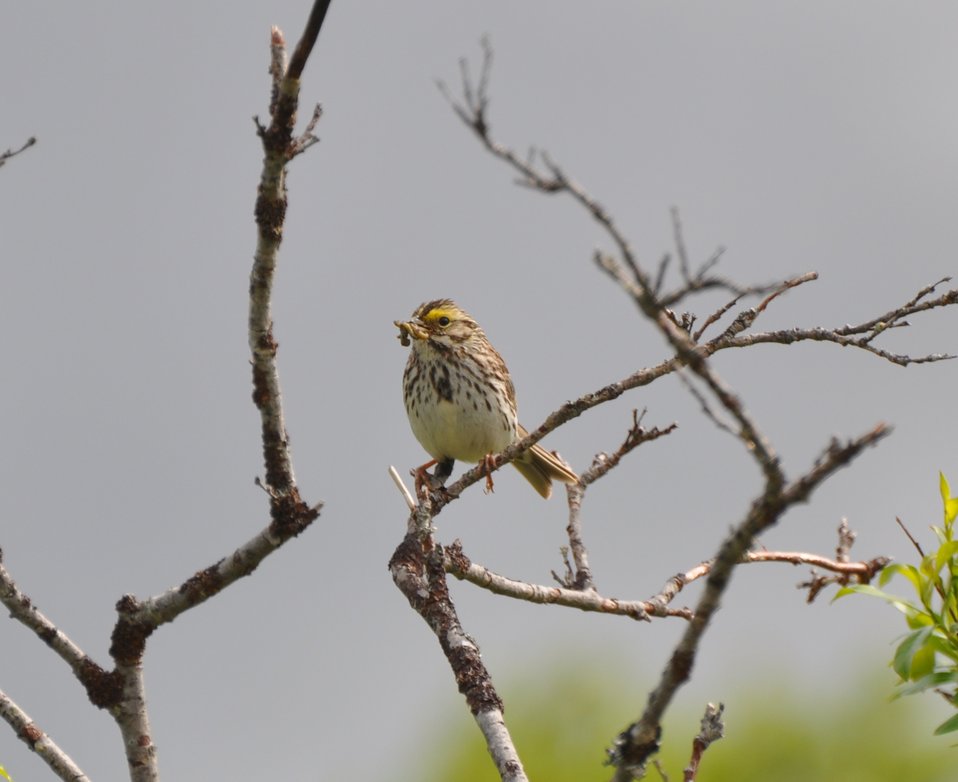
Savannah Sparrow

Andreafsky wilderness, Yukon Delta National Wildlife Refuge